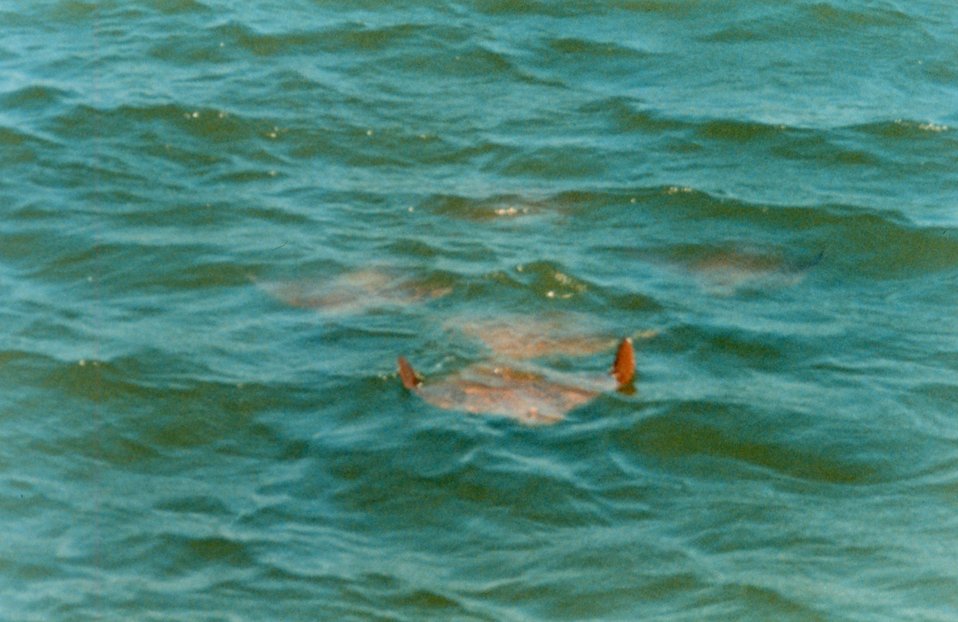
Five Cow-nosed Rays - Rhinoptera bonasus - gliding toward the photographer with both wing tips up.